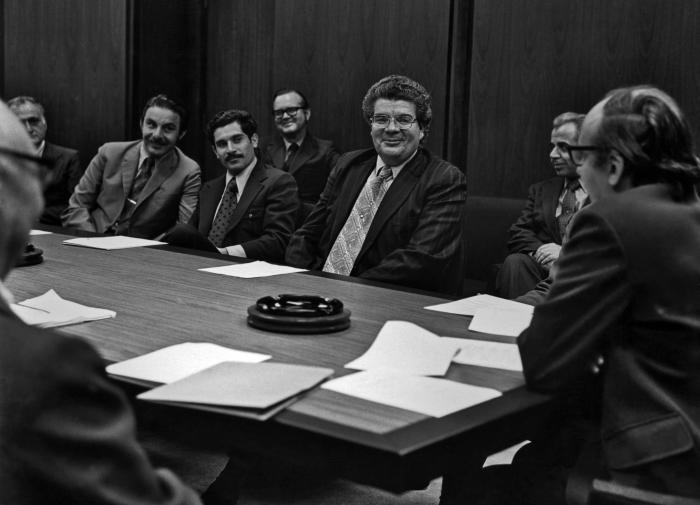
This photograph depicted meeting attendees gathered at the Centers for Disease Control and Prevention (CDC) Surveillance Course for the Pan-American Health Organization (PAHO) fellows. The course was held in the CDC's Atlanta offices from April 5, through December 10, 1971.